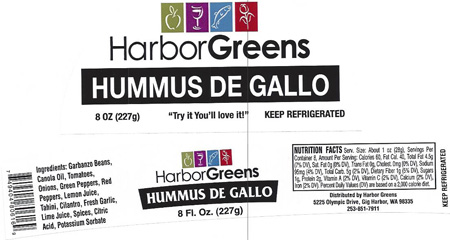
HarborGreens Hummus De Gallo Hummus 8oz

July 16, 2013 – Product Recall – Hagee Foods Inc. dba Penny's Salsa Inc. Recalls Hummus Products Because of Possible Health Risk.